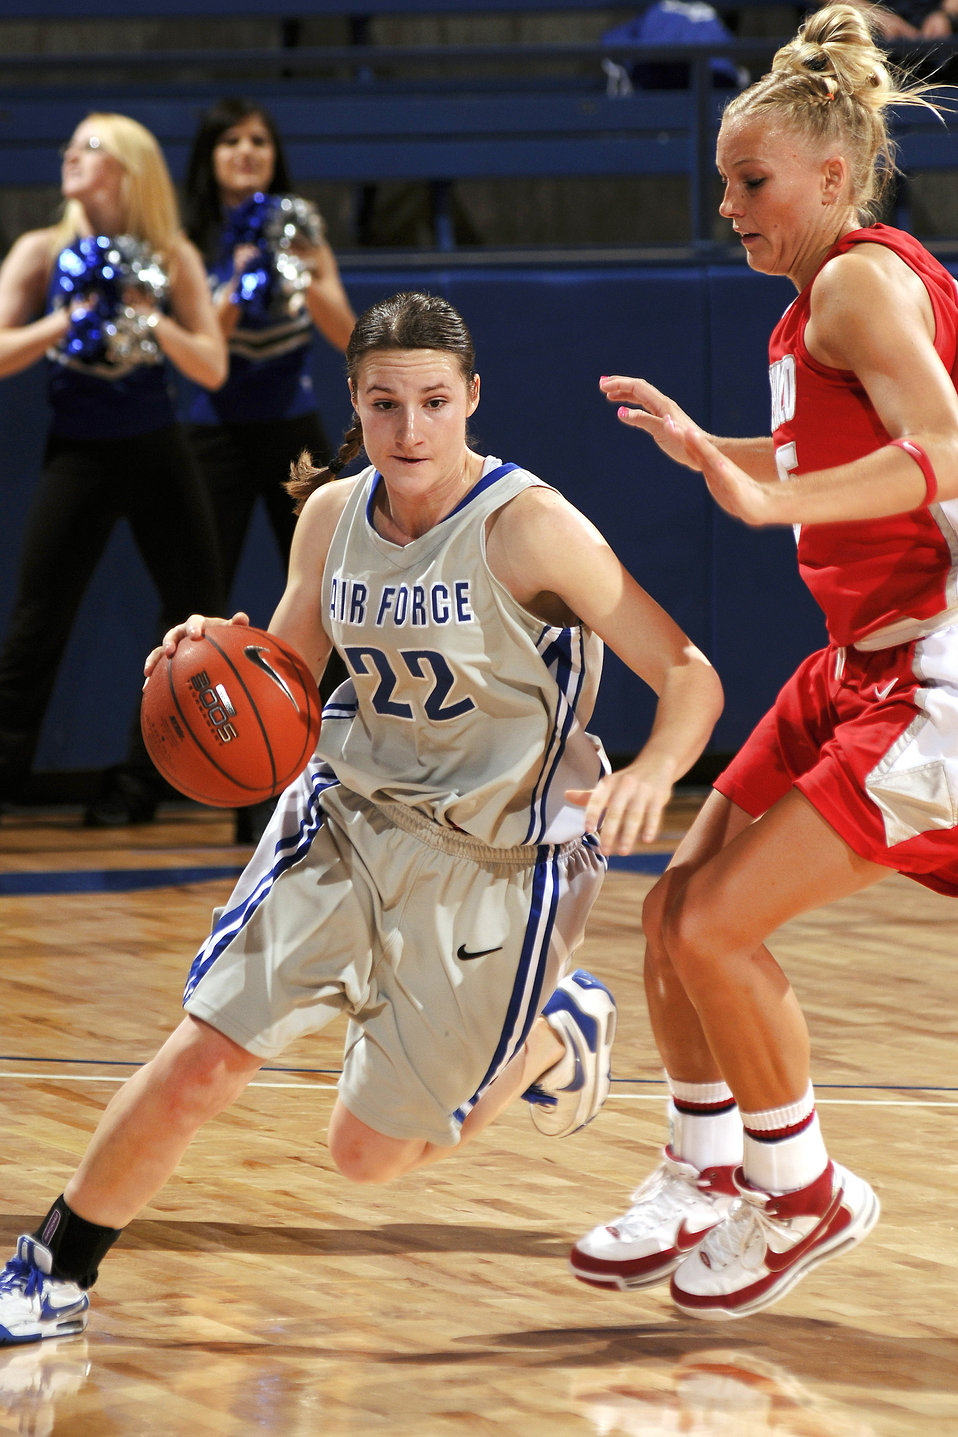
Aiming high

U.S. Air Force Academy sophomore guard Raimee Beck drives around a defender during the 73-39 loss against the New Mexico Lobos Jan. 9 at the Academy in Colorado. The Falcons return to action Jan. 14 at Utah.